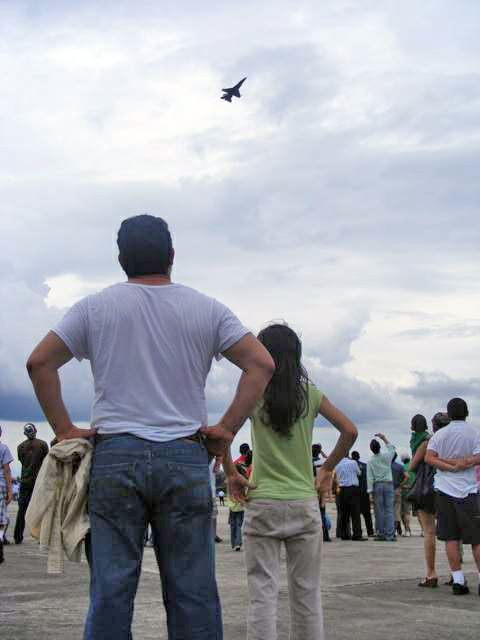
Honduras airshow aids local hospital

Maj. George Clifford performs an aerial demonstration for the airshow crowd in an F-16 Fighting Falcon June 21 at San Pedro Sula, Honduras. More than 30 Airmen participated at the international airshow. Major Clifford is a Viper East F-16 Demonstration Team pilot.